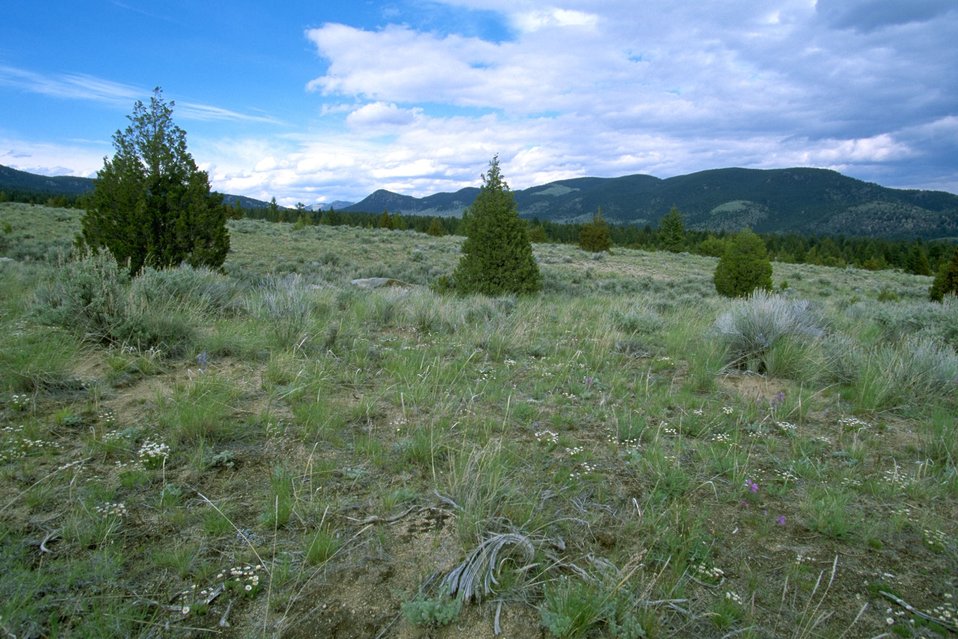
Junipers, grass and sagebrush on a hillside in the Pipestone Hills